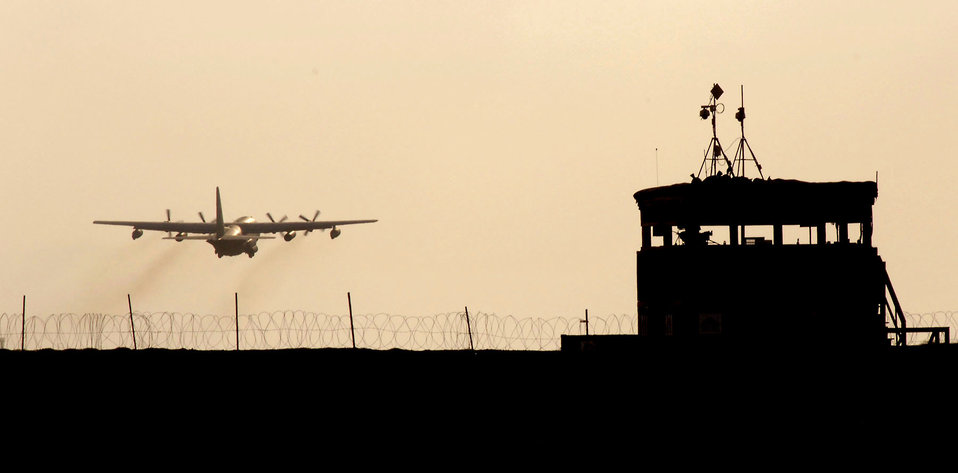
Djibouti air ops

An HC-130P takes off from Camp Lemonier headed down range in support of the Combined Joint Task Force-Horn of Africa mission. More than 1,500 men and women from all branches of service as well as civilians and coalition forces provide medical, humanitarian and nation-building efforts in Djibouti, Ethiopia, Eritrea, Kenya, Seychelles, Somalia, Sudan and Yemen.